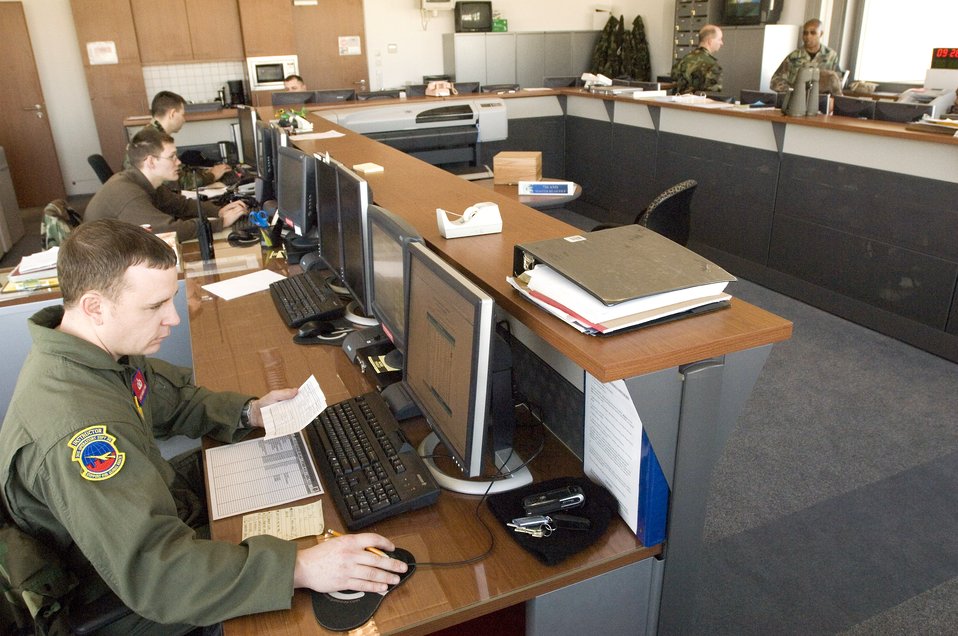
One stop support

Staff Sgt. Bobby Pickel keeps track of the gear he hands out to aircrews using his computer at Spangdahlem Air Base, Germany, on Thursday, March 23, 2006. Sergeant Pickel, of Woodbridge, Va., is a life support technician on temporary duty with Detachment 5, 817th Expeditionary Airlift Squadron at Spangdahlem. He is with the 305th Operational Support Squadron at McGuire Air Force Base, N.J.